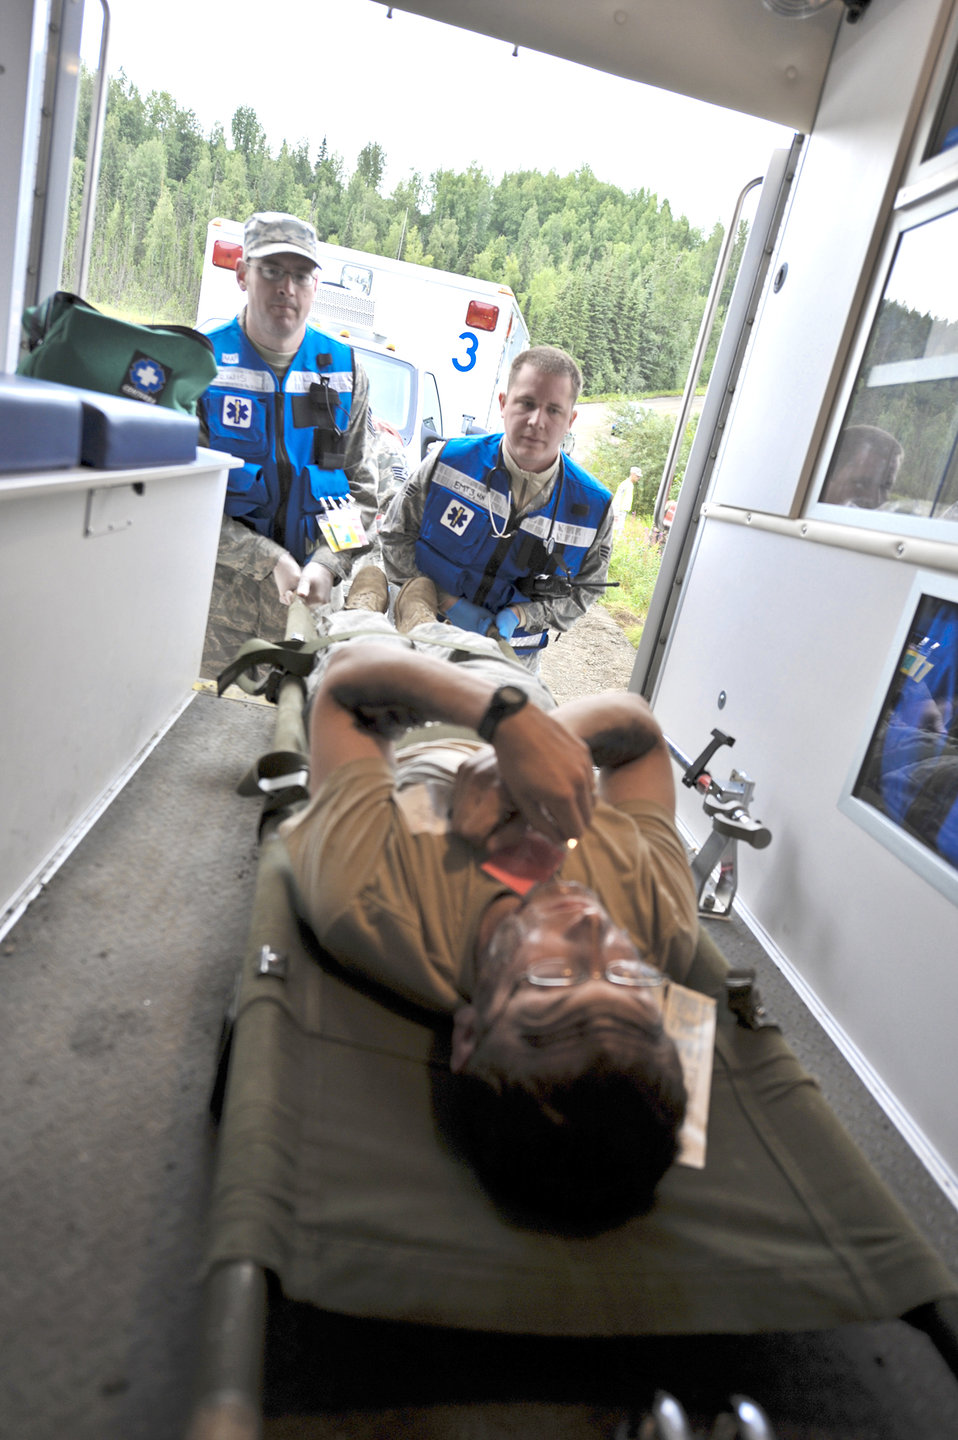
EMED training a first at JBER

Participants in an Expeditionary Medical Support Training exercise load a